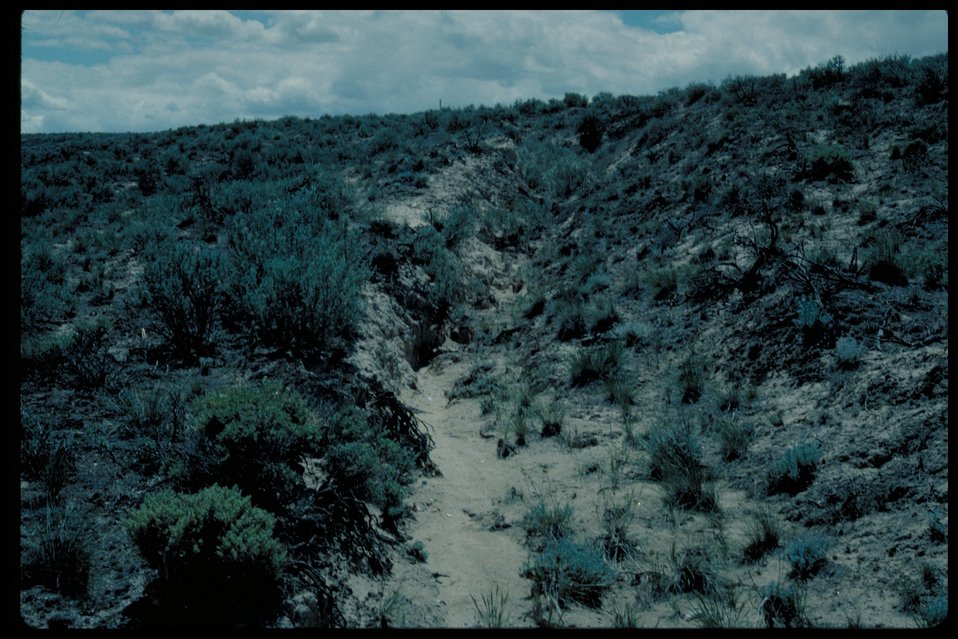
Oregon Trail south of Sinker Creek Lower Snake River District